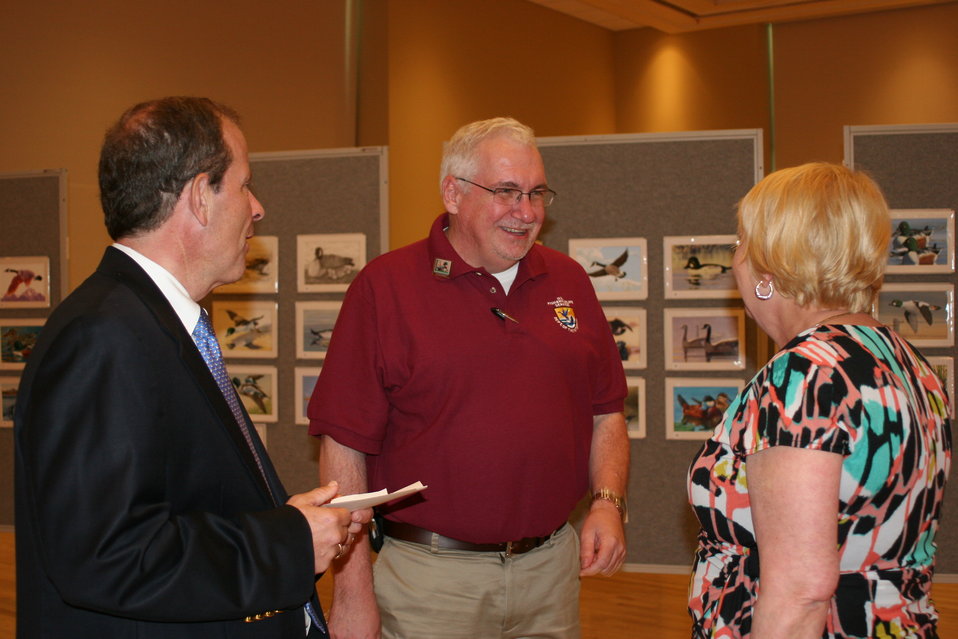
Staff

Photo Credit: Suzanne Fellows / USFWS
The U.S. Fish & Wildlife Service sponsored the 2012 Federal Duck Stamp Art Contest September 28 and 29 in Ogden, Utah, at Weber State University. A panel of five judges was responsible for choosing the art work used to design the 2013-2014 Migratory Bird Hunting and Conservation Stamp.